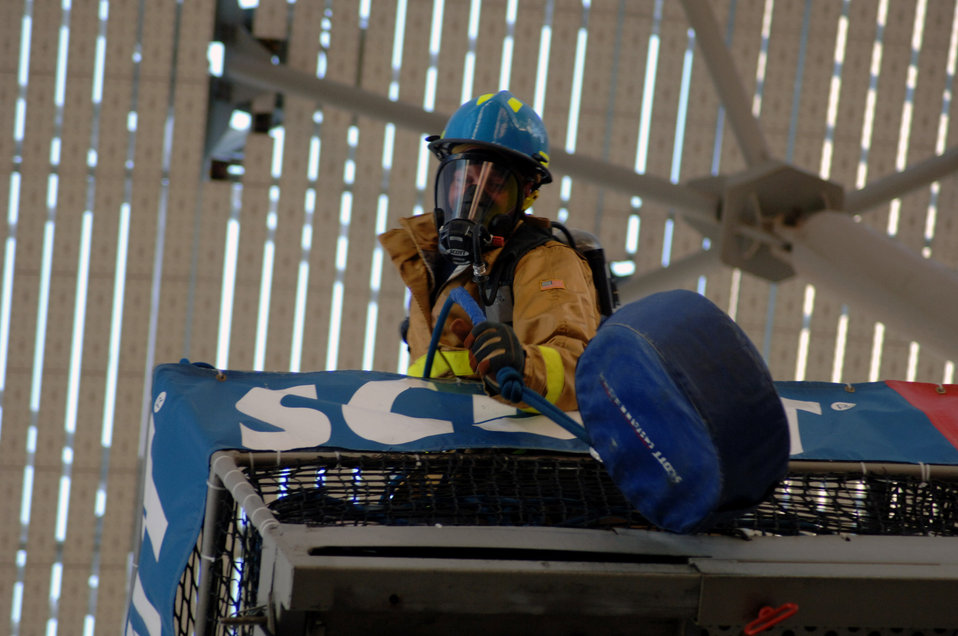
World Firefighter Combat Challenge

Air Force Academy firefighter Lance Gore pulls a 42-pound firehose up to the top of a five-story tower Nov. 5. Air Force Academy firefighters are one of several military firefighter teams competing in the World Firefighter Combat Challenge XVI in Las Vegas, which tests firefighters' job skills and endurance in timed trials.